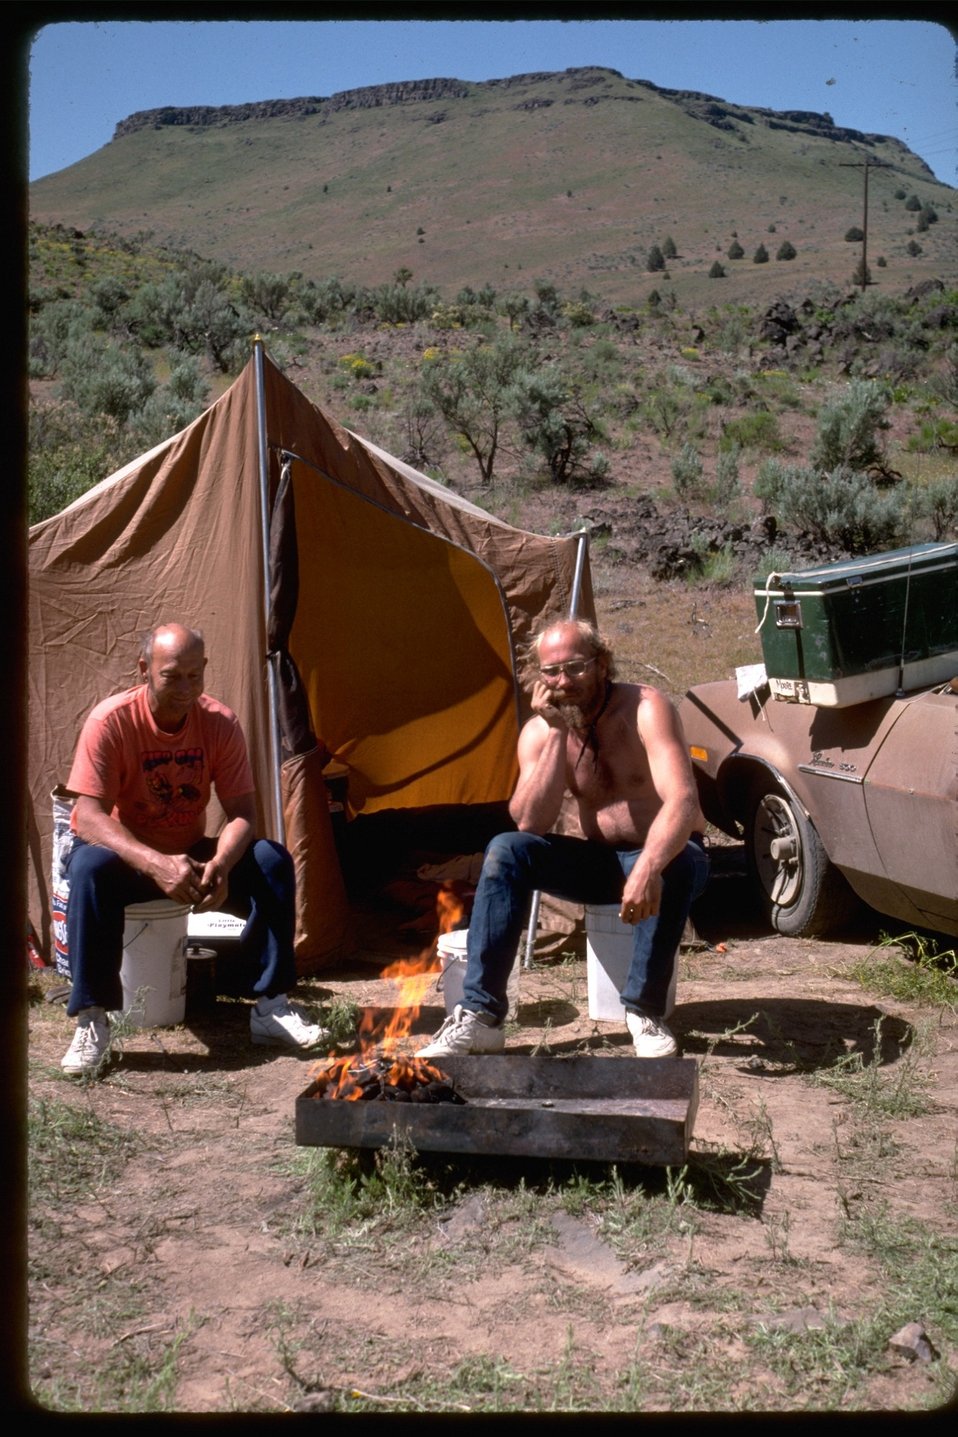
Campers with fire pan near Boxcar.